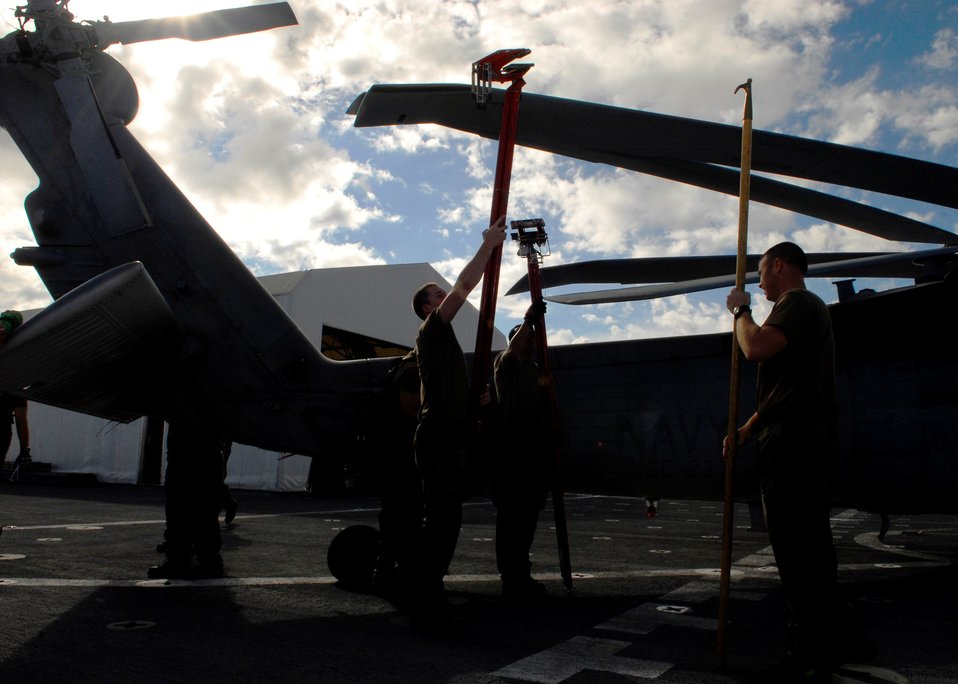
Crew Members from Helicopter Sea Combat Squadron 23 “Wild Cards” Unfasten the Blades of an MH-60S Knighthawk Helicopter

Crew members from Helicopter Combat Squadron 23 “Wild Cards” unfasten the blades of an MH-60S Knighthawk helicopter in preparation for flight operations aboard the Military Sealift Command hospital ship USNS Mercy (T-AH 19) on July 8, 2010. Mercy is conducting Pacific Partnership 2010, the fifth in a series of annual U.S. Pacific Fleet humanitarian and civic assistance endeavors to strengthen regional partnerships.